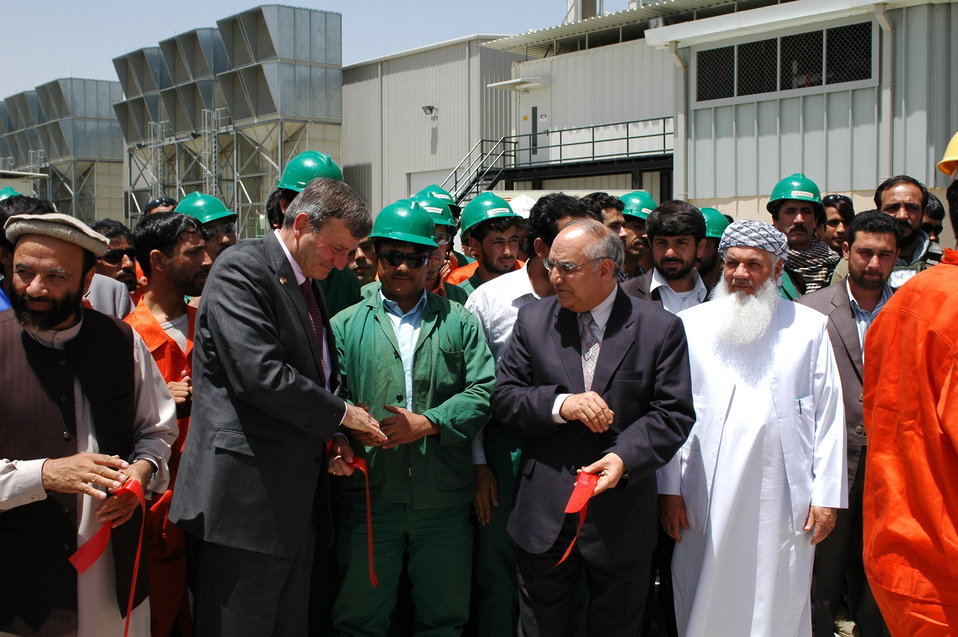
105 MW Tarakhil Power Plant Handover